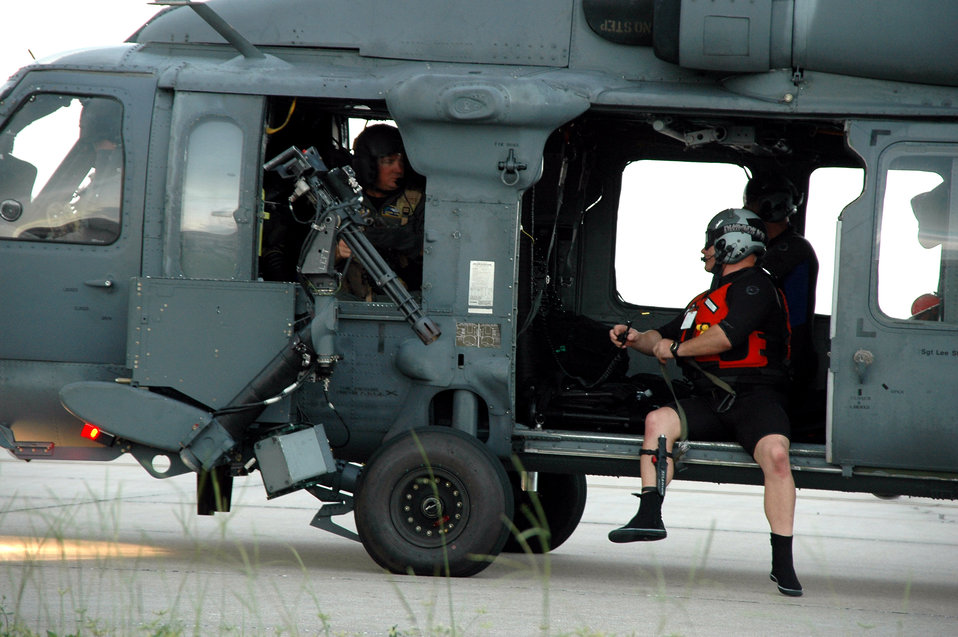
Wing answers call for help for missing diver

A helicopter rescue crew from the 920th Rescue Wing refuels at Patrick Air Force Base, Fla., before heading back out to the Atlantic Ocean off the coast of Cape Canaveral to continue their search efforts for a missing diver July 26.